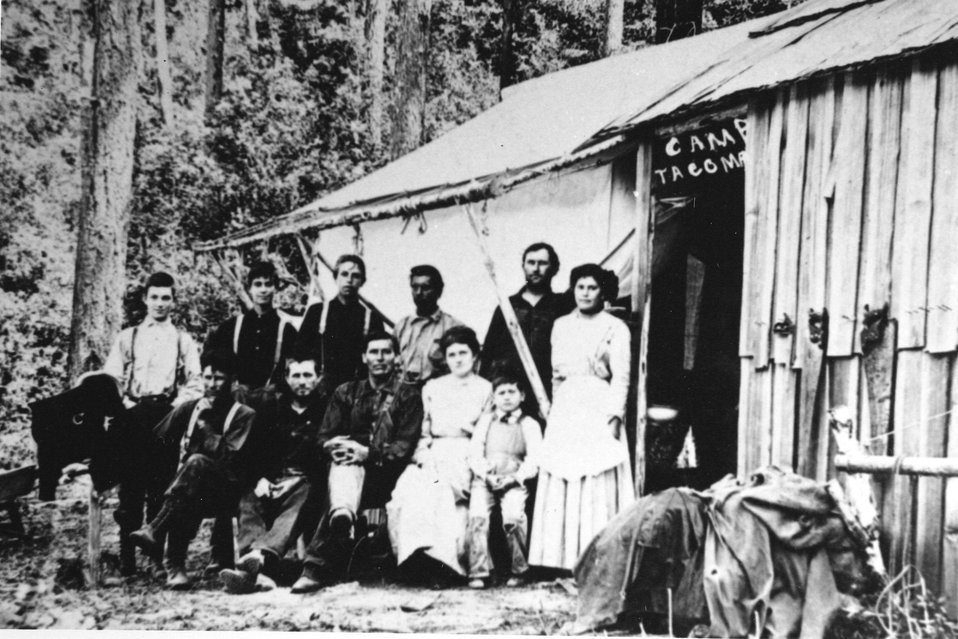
Camp Tacoma. Marial Billings on the right and Tom Billings in the middle.